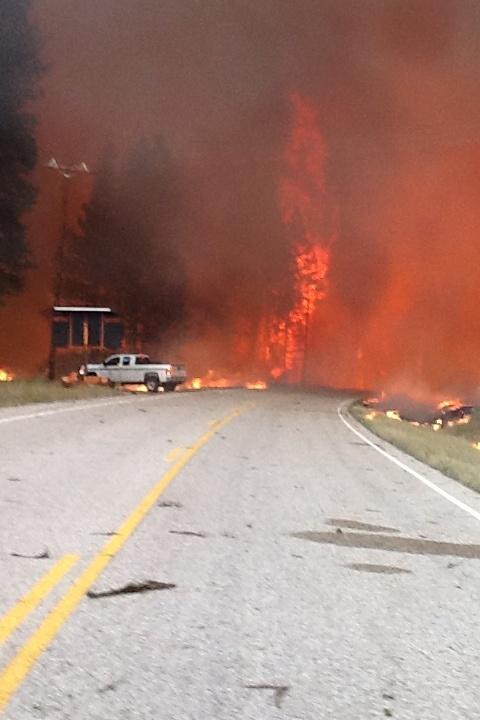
The Lolo Creek Fire crossed US Highway 12 on Aug. 19, 2013. The Lolo Creek Fire in the Lolo National Forest near Lolo, MT began on Aug. 18, 2013 by lightning has consumed approximately 10,892 acres and is 47% contained.